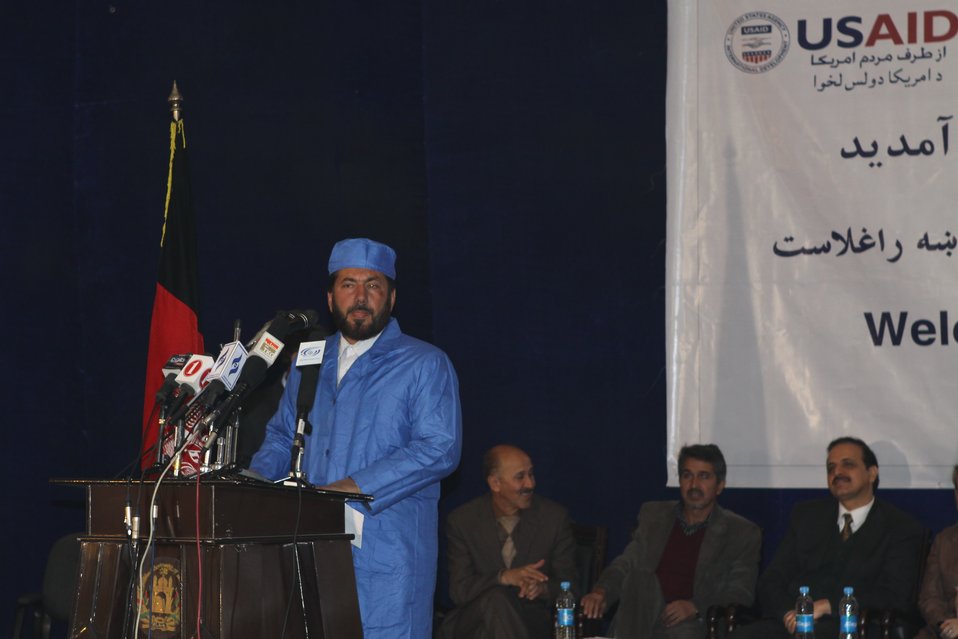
Community Health Workers Celebrated

Kabul, Afghanistan | December 5, 2010 — In support of the United Nations designated International Volunteer Day for Economic and Social Development, Afghanistan’s Ministry of Public Health celebrated its annual Community Health Worker Day today. Acting Minister of Public Health Dr. Suraya Dalil, USAID Senior Deputy Mission Director Robert Hellyer, other government officials, and international donors joined in recognizing the critical contribution of community health workers in Afghanistan and encouraging them to continue their voluntary support to their communities.
The event praised the contributions of the more than 22,000 volunteers throughout the country who deliver community level health-education, counseling, and services out of village health posts located in private homes. The Ministry of Public Health envisioned that community-based healthcare programs will actively encourage communities and families to adopt healthy lifestyles and behaviors, and provide families access to high quality and socially acceptable preventative medicine and life-saving services.
“We have 22,000 community health workers in Afghanistan that are able to implement the basic and standard medicines. They all have been trained through a job description,” said Minister Dalil. Addressing the health workers, she added, “I am proud and feel powerful that I have people like you.”
USAID-funded health projects collaborate closely with the Ministry of Public Health to improve the health and nutritional status of Afghans, provide quality primary healthcare, and promote healthy behaviors at the community and household-levels. USAID supported the training of more than 9,000 of the volunteer community health workers currently working in Afghanistan.
“On behalf of the American people, I congratulate the Community Health Workers for their diligence to gain the skills and knowledge necessary to serve their communities in this important role,” said USAID Senior Deputy Mission Director Hellyer. “USAID strongly supports community based health care and believes that quality community-based health services are essential to reaching Afghanistan’s Millennium Development Goals.”
To support the Basic Package of Health Services, USAID assisted in developing the community health worker training manual, helped train community health worker supervisors and master-trainers, facilitated in-service training, and produced and developed reporting tools, job aids, and education materials.